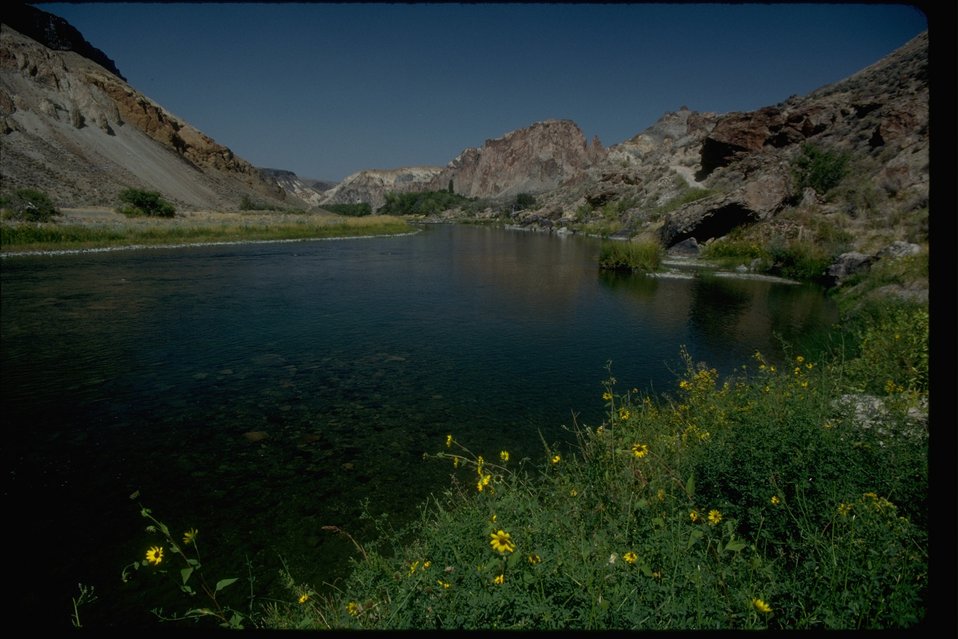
Birch Creek area in the Owyhee Breaks Wilderness Study Area. OR 3-59